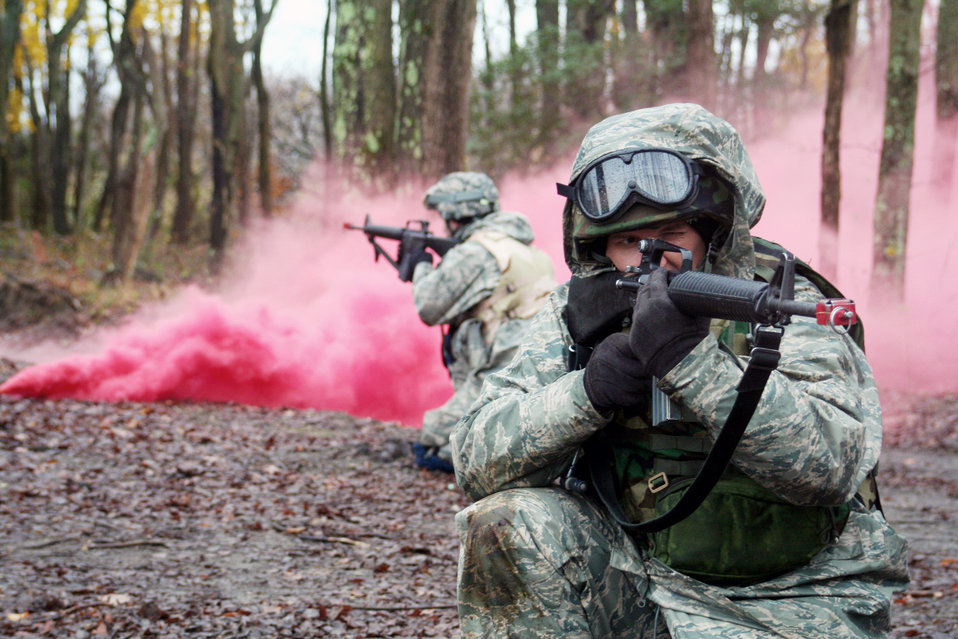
We'll smoke them out

Students in the Combat Airman Skills Training Course use a smoke diversion tactic Nov. 12, 2009, on a range at Joint Base McGuire-Dix-Lakehurst, N.J.